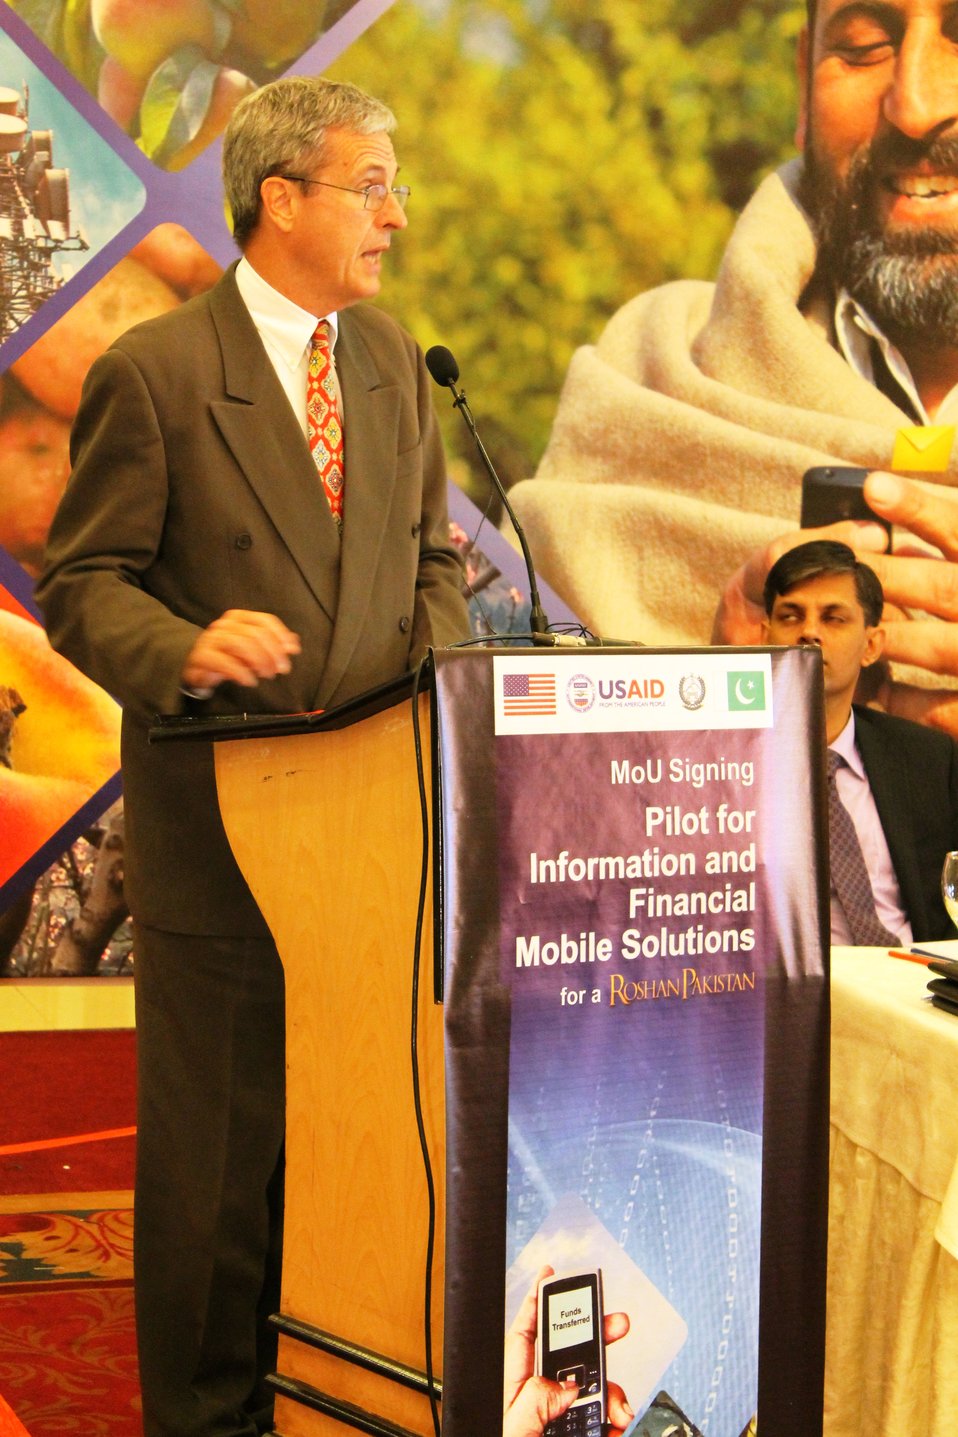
Pilot for Information and Financial Mobile Solutions - MoU Signing

'This tripartite will bring new mobile technology to farmers in Swat District. I hope this initiative will become yet another success story that USAID has been able to facilitate in Swat,' said Mr. Jonathan Conly, Mission Director, USAID Pakistan